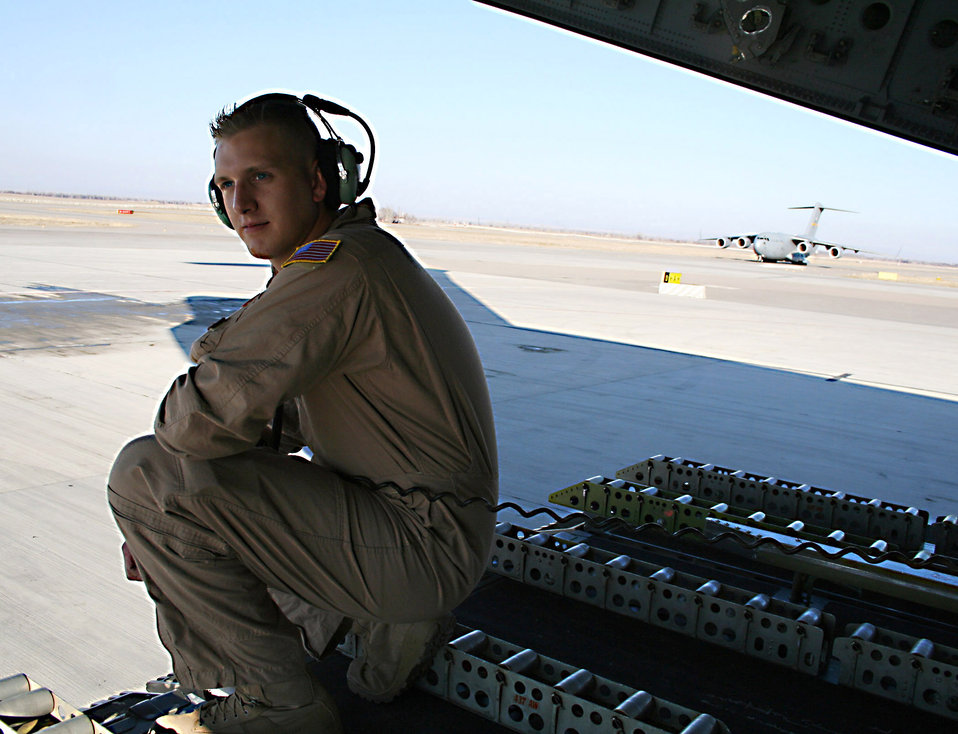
C-17 crews deliver in Central Asia

Airman 1st Class Jesse Doyle guides the pilots of a C-17 Globemaster III as they back the jet onto the taxiway, while another C-17 idles, waiting to pull into a parking space on the crowded ramp. The hub of Operation Enduring Freedom, Manas Air Base, Kyrgyzstan, has processed through tens of thousands of troops en route to Bagram Air Base, Afghanistan in the first two months of the new rotation with C-17 crews running several shuttles daily. Airman Doyle is deployed from McChord Air Force Base, Wash.